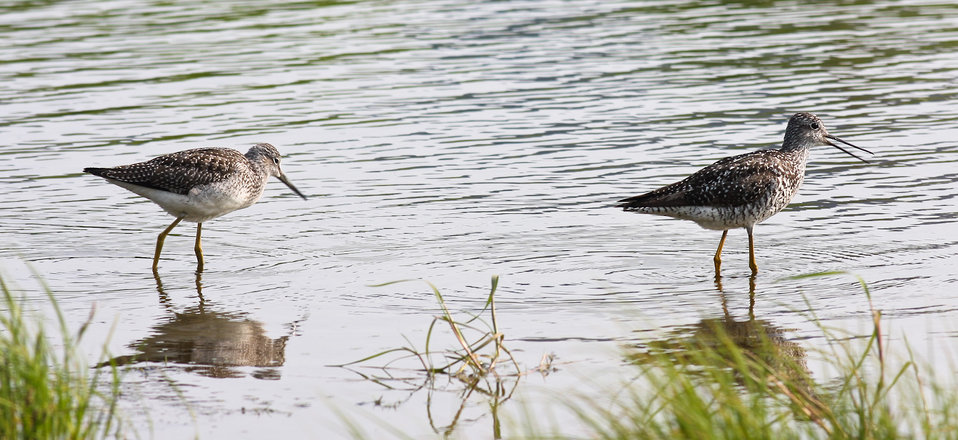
Lesser Yellow Legs

Lisa Hupp/USFWS